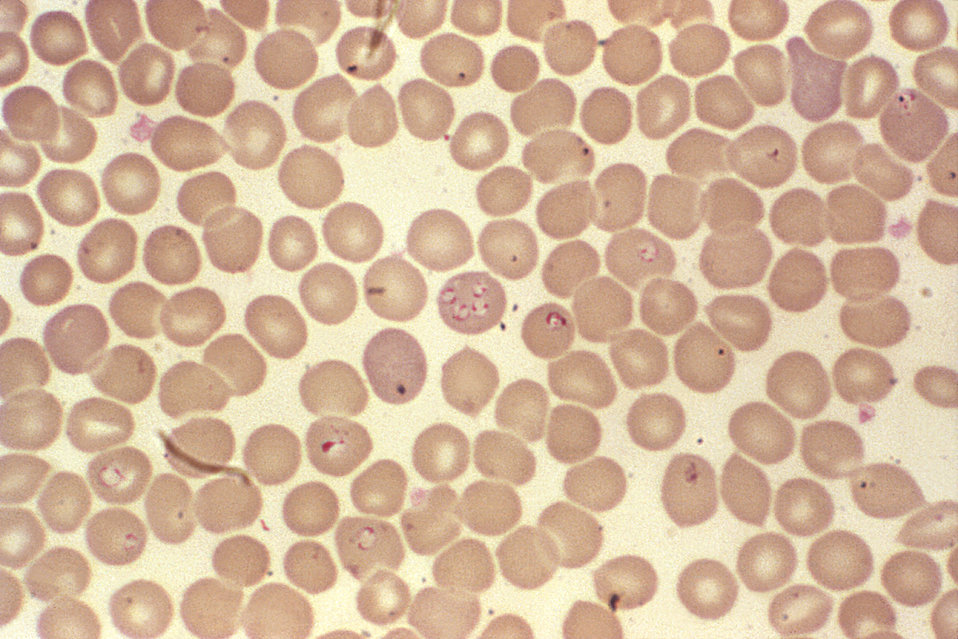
Other hemoprotozoan parasites such as these Babesia sp. resemble Plasmodium falciparum organisms.